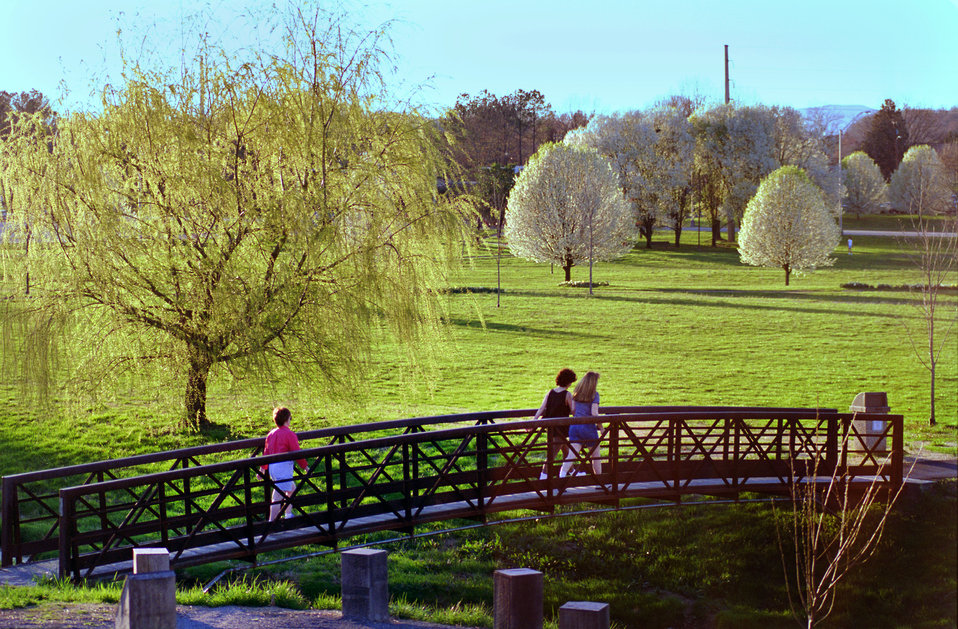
Bissell Park Oak Ridge

97-139-29 DOE photo by Lynn Freeny

Bissell Park Oak Ridge Tennessee 3-12-1997